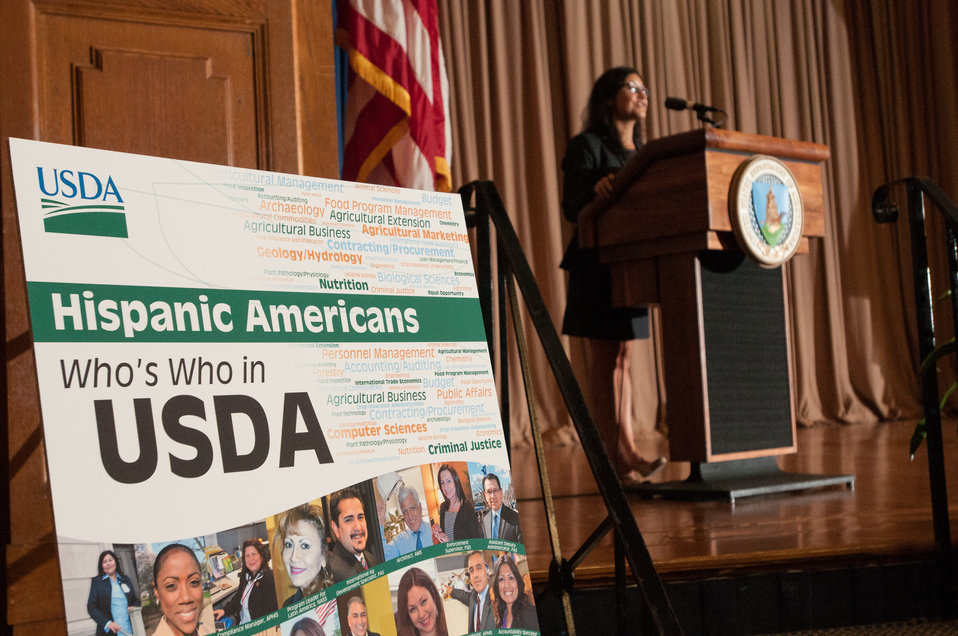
White House Office of Public Engagement Associate Director Julie Chavez Rodriguez speaking during the U.S. Department of Agriculture (USDA) 2013 National Hispanic Heritage Month ”Hispanics: Serving and Leading our Nation with Pride and Honor,” on Thursday, Sept. 19, 2013, in the Jefferson Auditorium, USDA Headquarters, Washington, D.C.